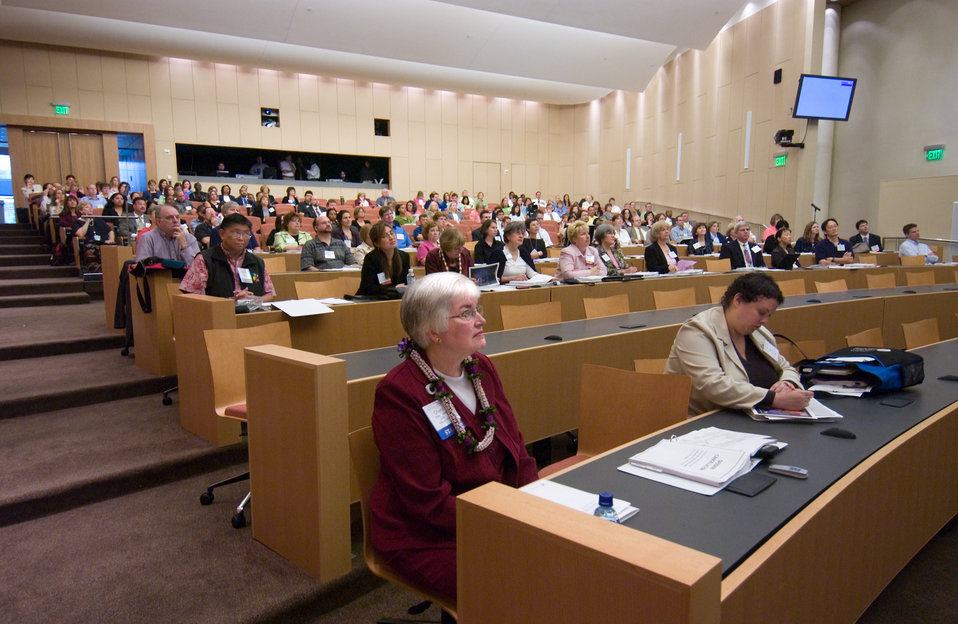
This photograph showed Distance Learning Coordinators (DLC) from the academic, clinical, governmental and non-governmental fields, while attending the 13th Annual Public Health Distance Learning Summit in September, 2005. The meeting was held on the Center for Disease Control's (CDC) Robal Campus in Atlanta, Georgia, at the new Tom Harkin Global Communications Center, otherwise known as Building 19. The National Center for Health Marketing (NCHM), Director for the Division of Creative Services, Cheryl Lackey could be seen seated in the foreground.